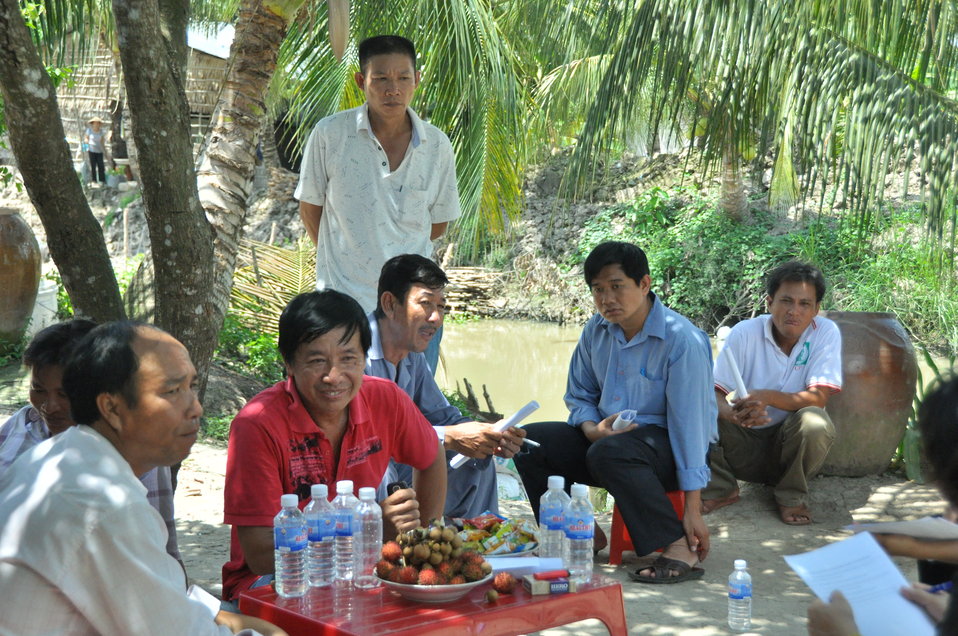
Local duck farmers discuss implementation of biosecurity standards in Can Tho

USAID Vietnam